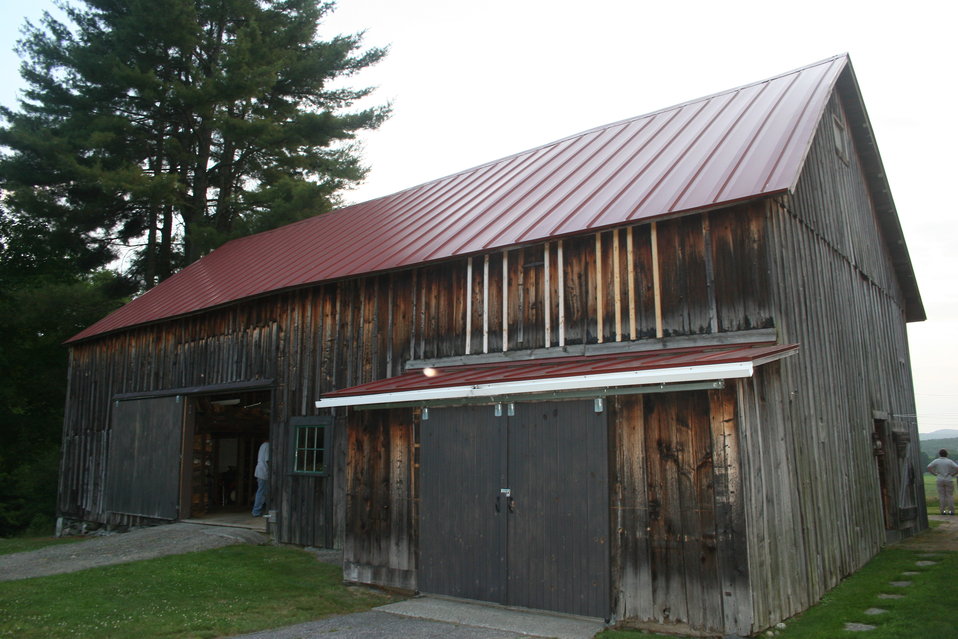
Barn with maternity colony of little brown bats.